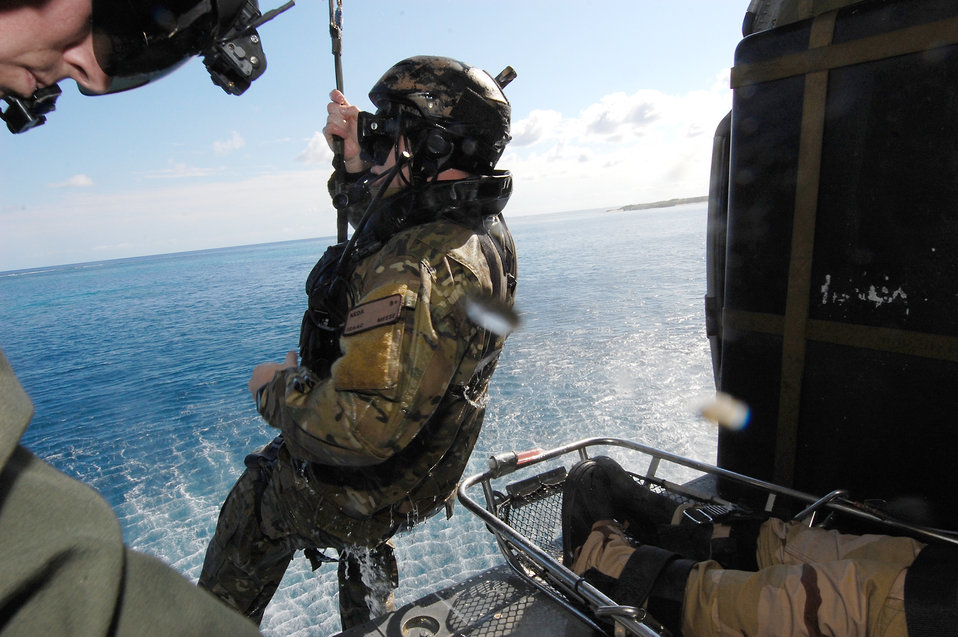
Keen Sword 2011

Senior Airman Jeremy Garrett (left) and Senior Airman Issac Meese perform a simulated rescue during the Keen Sword exercise here at Kadena Air Base, Japan, Dec. 6, 2010. Airman Garrett is a flight engineer with the 33rd Rescue Squadron and Airman Meese is a pararescueman with the 31st Rescue Squadron.